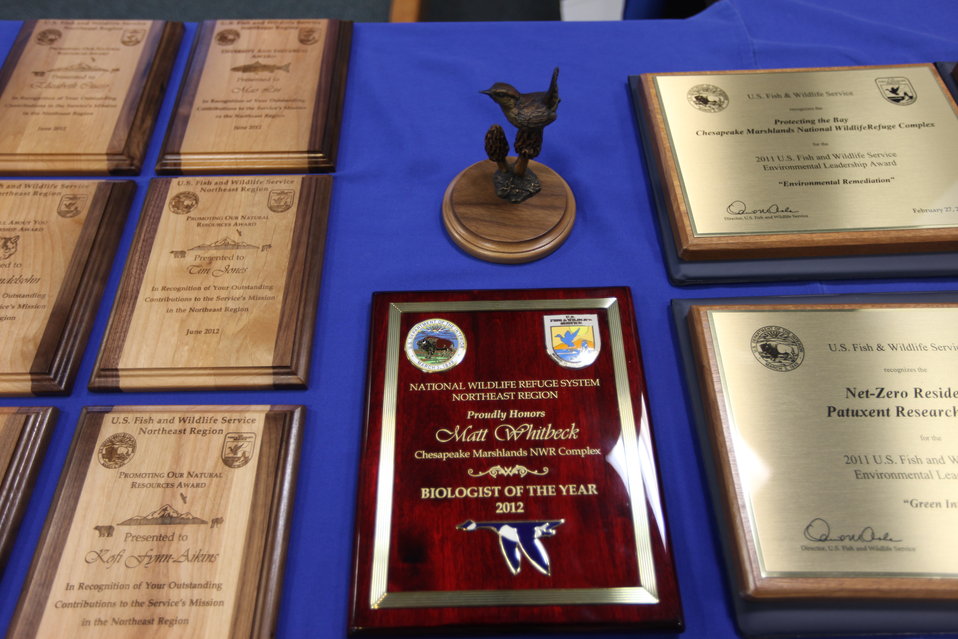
Northeast Region Employee Appreciation Awards